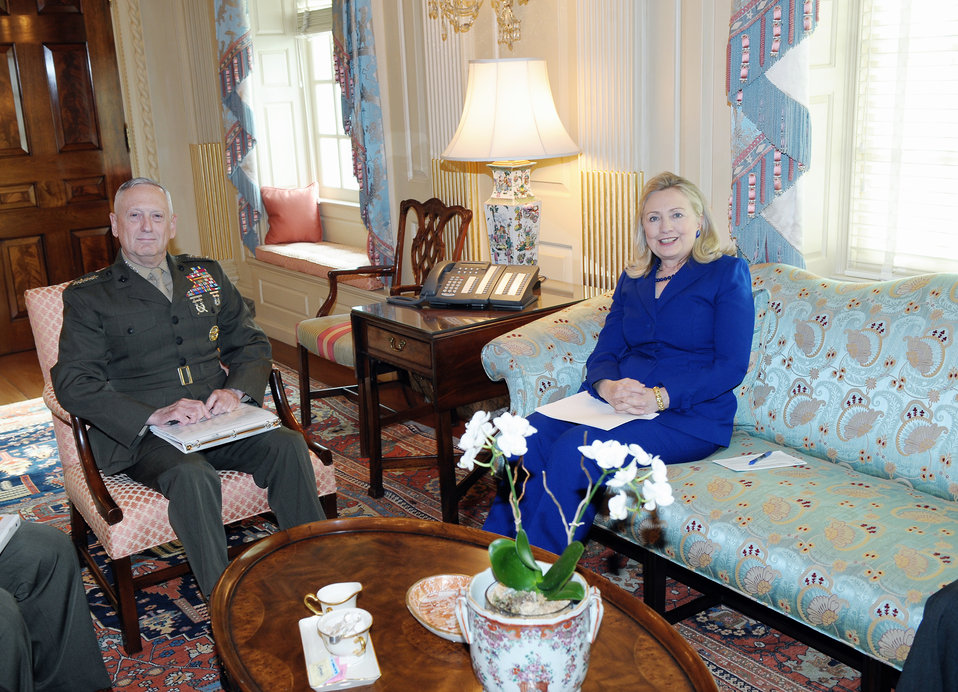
Secretary Clinton Meets With General James Mattis

U.S. Secretary of State Hillary Rodham Clinton meets with General James Mattis at the U.S. Department of State in Washington, D.C., on January 26, 2012.